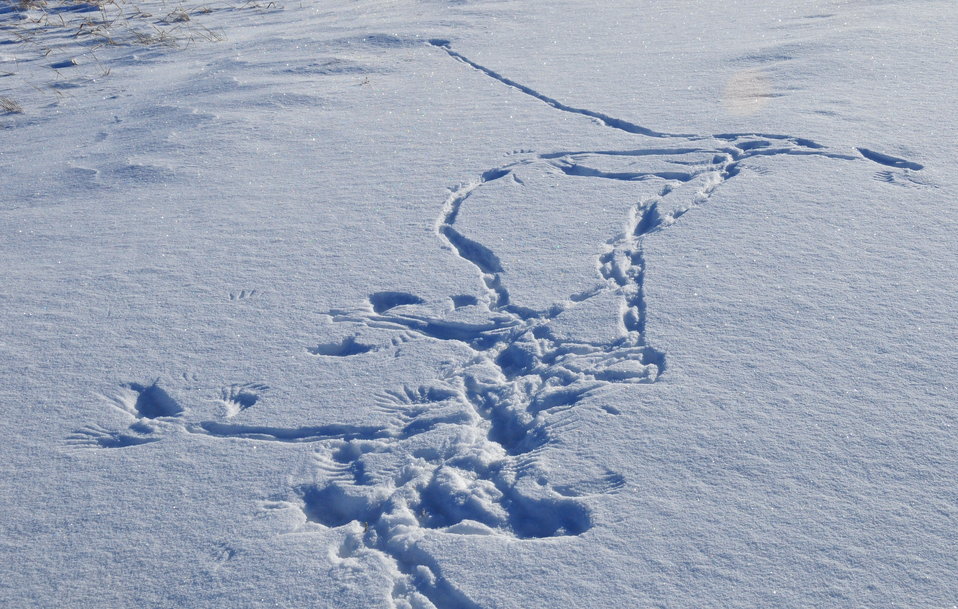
Magpie Snow Angels

A magpie left signs in the snow. Was it chasing a mouse or just making snow angels?